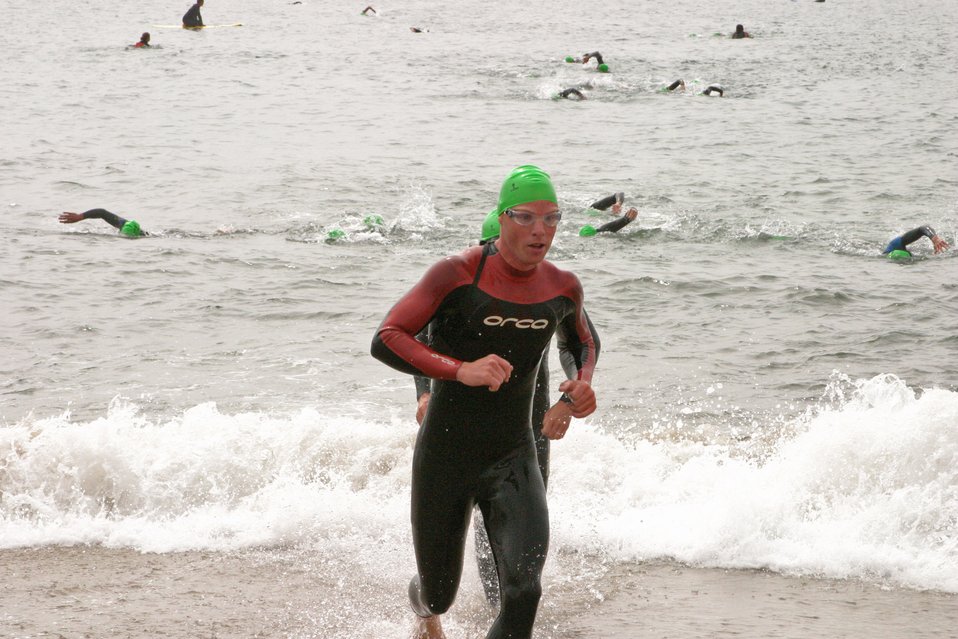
Air Force takes Gold, Silver at 2007 Armed Forces Triathlon Championship

Tech. Sgt. Michael Berquist finishes the swim event during the 2007 Armed Forces Triathlon Championship at Naval Base Ventura County-Point Mugu, Calif., July 28. Sergeant Berquist, from Fairchild Air Force Base, Wash., was the third Air Force member to finish and came in sixth overall in the men's division.